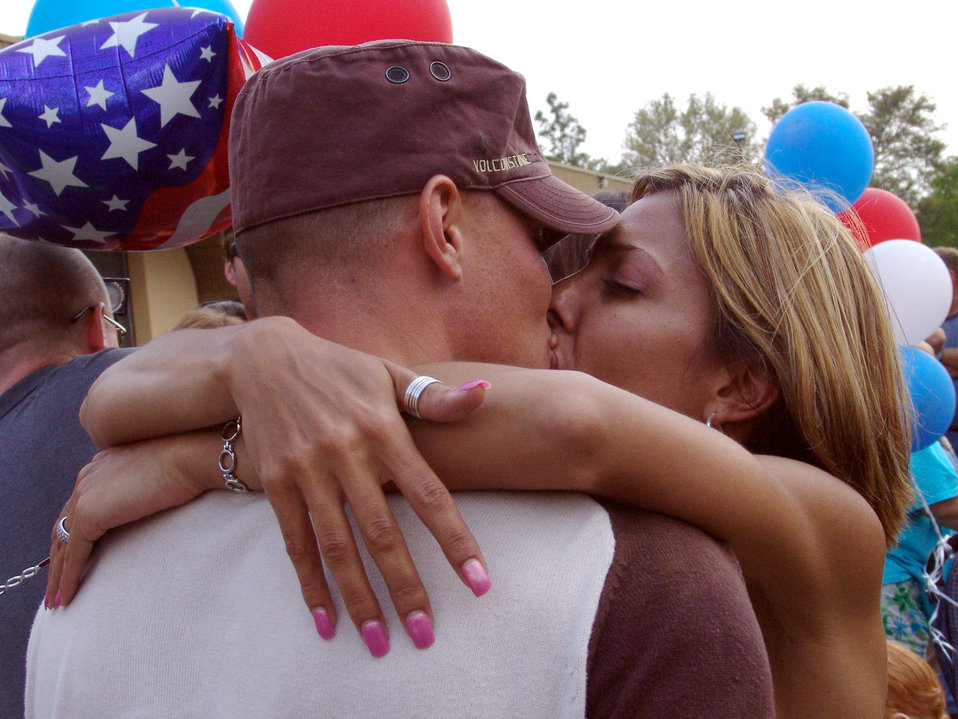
Happy huggy homecoming

EGLIN AIR FORCE BASE, Fla. -- Staff Sgt. Byron Ling gives a kiss to his fiancee, Staff Sgt. Aja Warren, May 11 upon his return from a deployment supporting Operation Iraqi Freedom. Families and friends welcomed 73 Airmen returning from Balad Air Base, Iraq, who are assigned to the 96th Civil Engineer Squadron and the 96th Logistics Readiness Squadron here. Sergeant Ling is assigned to the 96th CES, and Sergeant Warren is assigned to the 96th LRS.